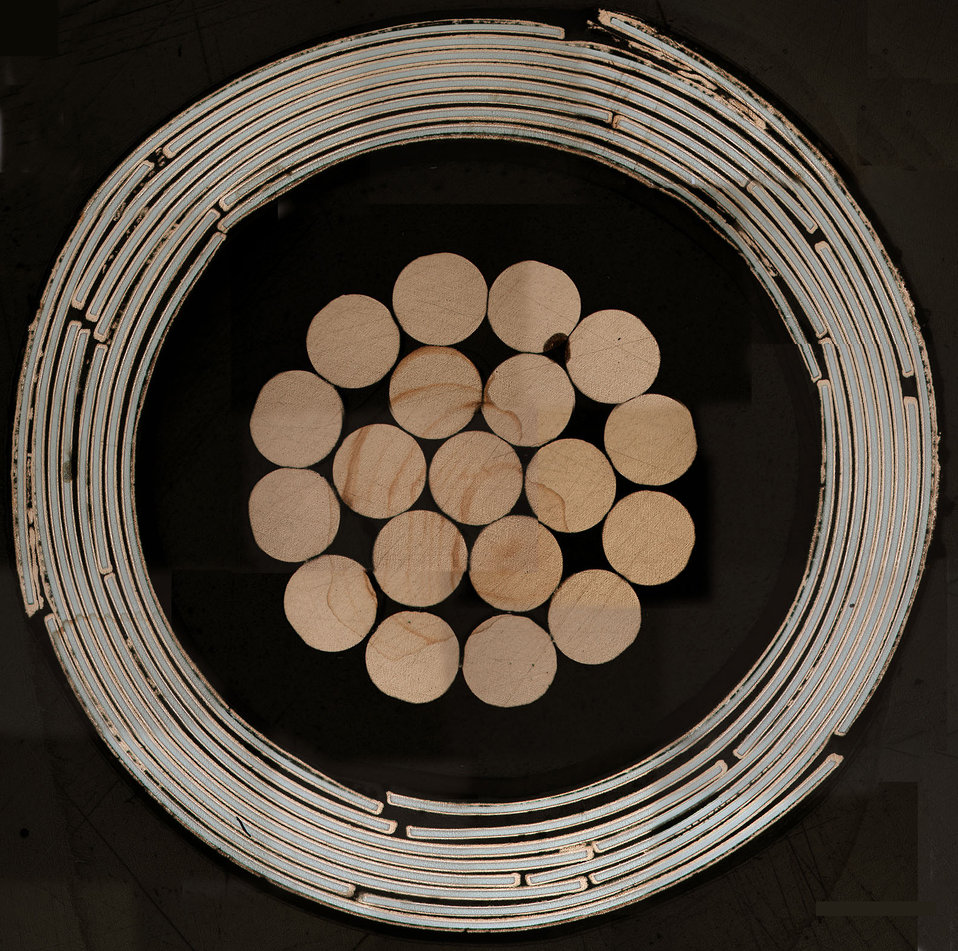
High-Temperature Superconducting Cables

Cross-section of a high-temperature superconducting cable design invented at NIST. In the center are copper wires bundled with nylon and plastic insulation. The outer rings are a series of superconducting tapes wrapped in spirals around the copper. The cable is 7.5 millimeters in outer diameter.

See also
www.nist.gov/pml/electromagnetics/htc-062211.cfm

Credit: van der Laan/NIST